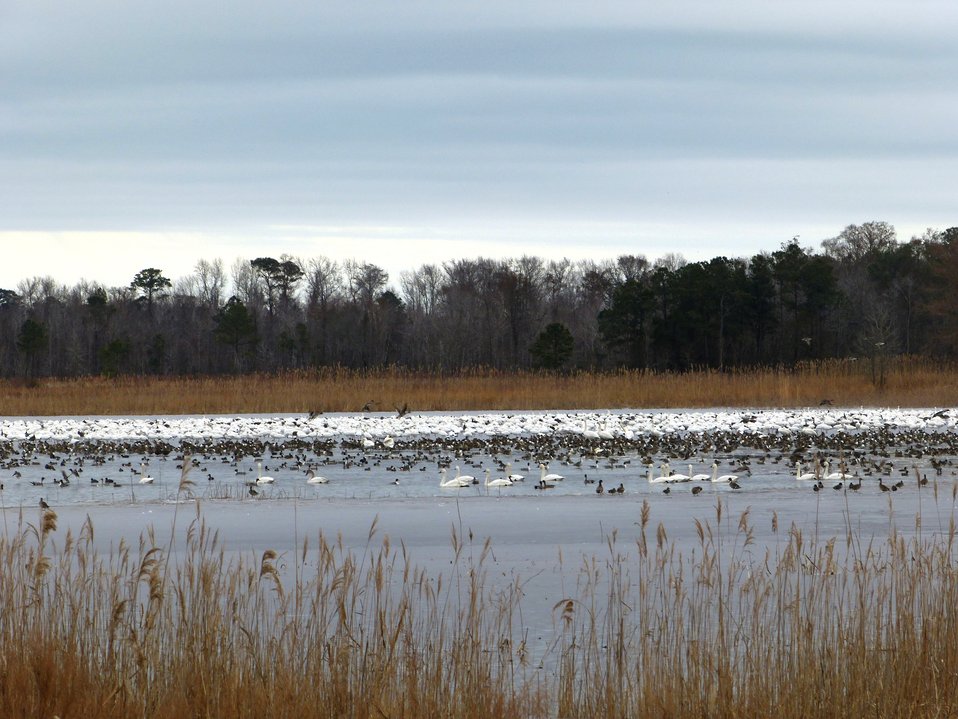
A mixed flock - 2

At Mattamuskeet National Wildlife Refuge in North Carolina. The Refuge’s prime location along the Atlantic Flyway makes it a vitally important stopover for wintering waterfowl.

In total, the Refuge attracts more than 200,000 ducks, geese and swans from November through February.